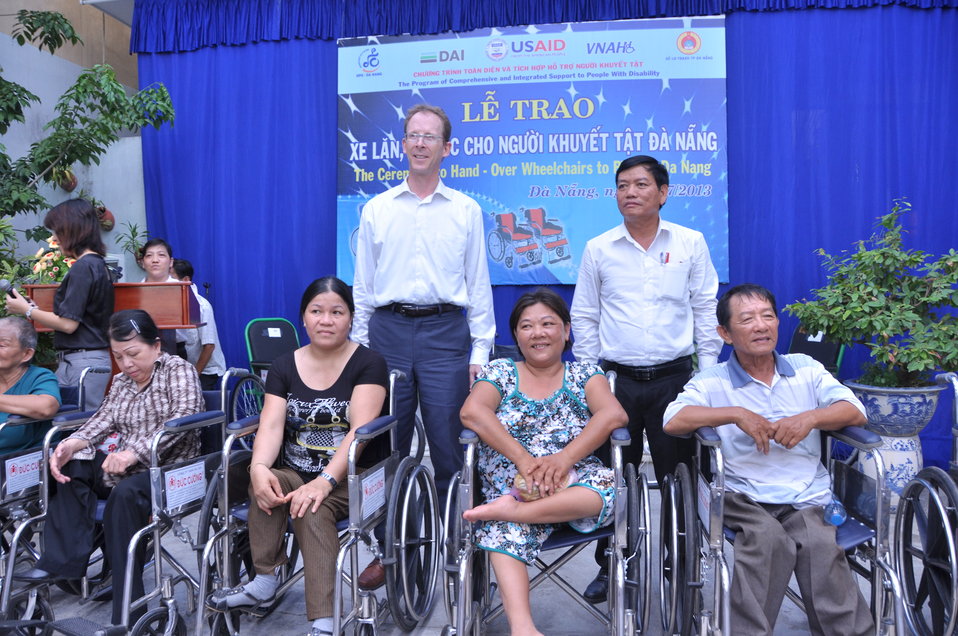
USAID Project Supports Rehabilitation Department for Children and Wheelchair Distribution in Danang

Beneficiaries in Danang, Vietnam, receive wheelchairs.